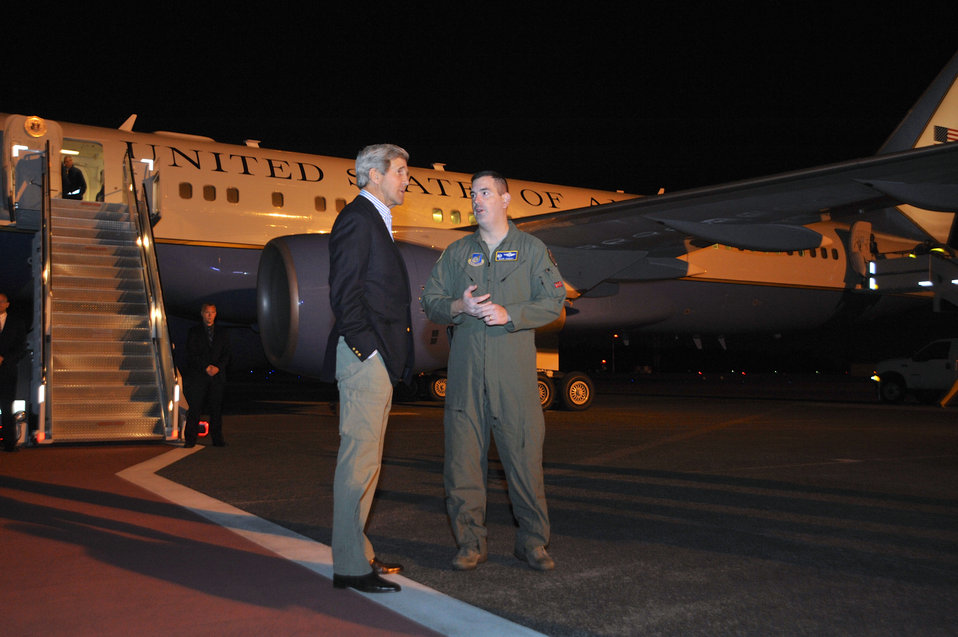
Secretary Kerry Chats With an Air Force Colonel

U.S. Secretary of State John Kerry chats with a U.S. Air Force Colonel while his jet refuels at Yokota Air Base in Japan on July 3, 2013, en route to Washington, D.C., during the final legs of a 12-day, around-the-world trip.